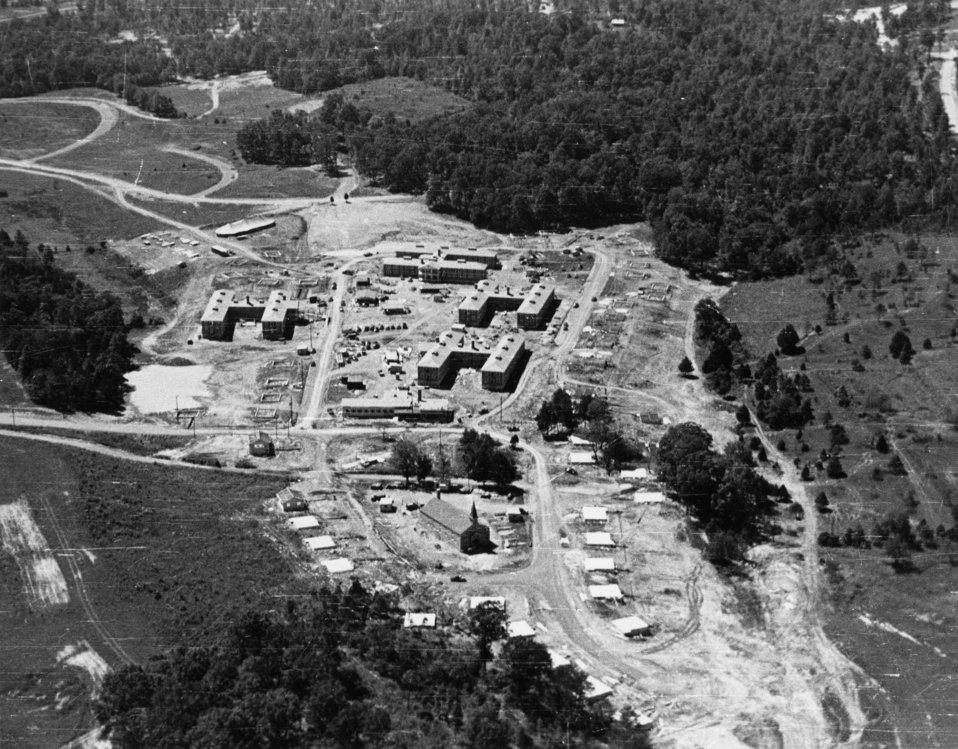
Aerial of Oak Ridge